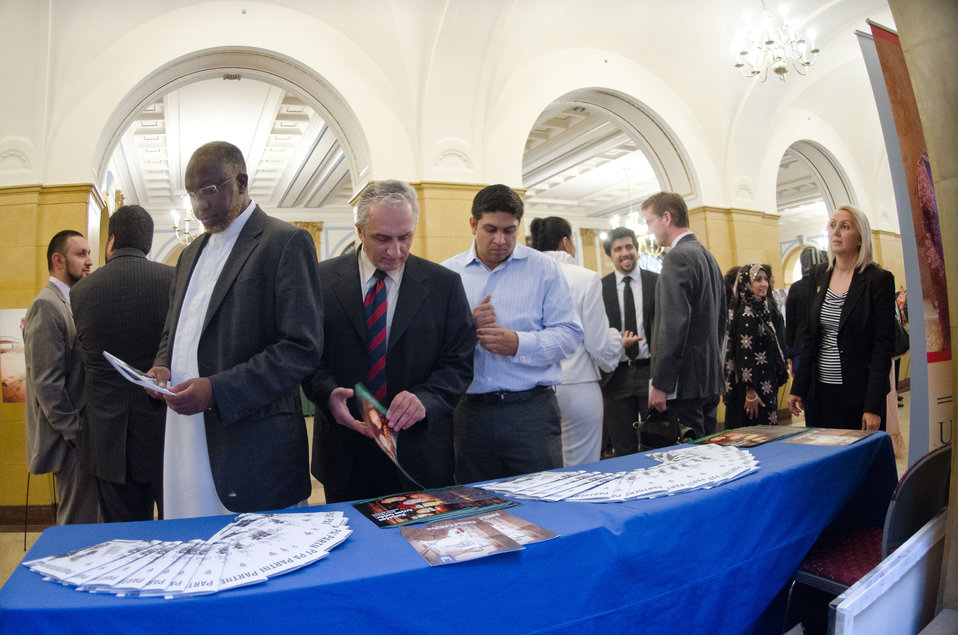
Guests learn about the U.S. Agency for International Development (USAID) mission during the Iftar event, co-sponsored by the Iftar celebration, co-sponsored by the U.S. Department of Agriculture, U.S. Agency for International Development (USAID) and Islamic Relief USA, on Tuesday, August 7, 2012, in the USDA Whitten Building, in Washington, D.C. Ramadan is the month of fasting, intensive prayer, sacrifice and worship for Muslims around the world. Throughout this month, Muslims fast during the day, abstaining from consuming food from dawn to dusk and using this time to purify spiritually. Fasting reminds Muslims of the poverty and hunger suffered by many in the United States and worldwide. It is a connection with those who are hungry not through devotion, but through the many global factors that lead to hunger and famine. Iftar is the meal at which Muslims break their fast at sunset, usually by eating dates, according to the Prophetic tradition.